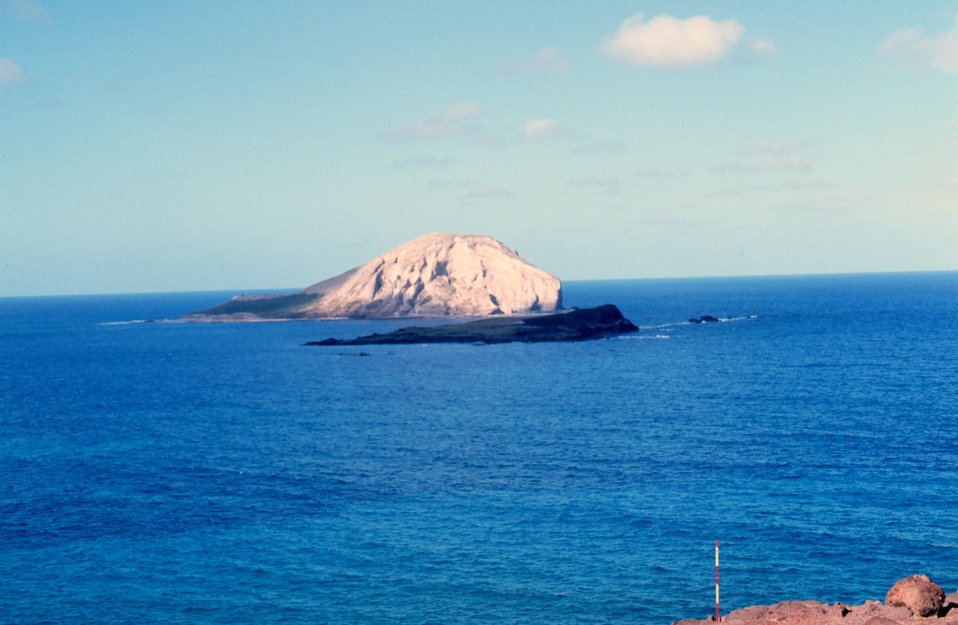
Rabbit Island